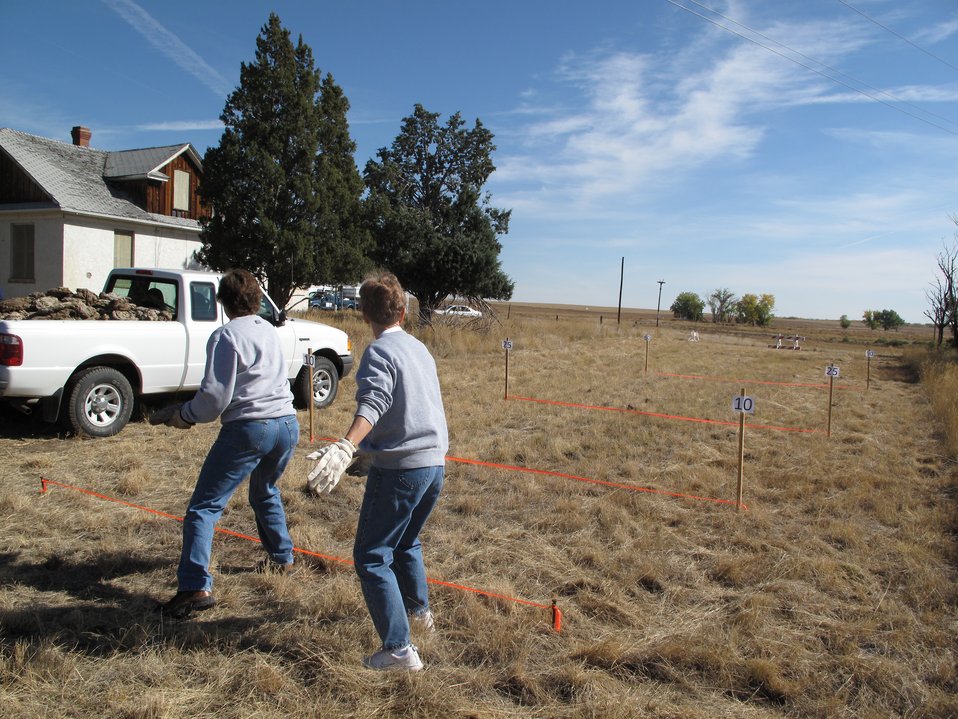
Refuge Round-up 2010

Bison chip toss.